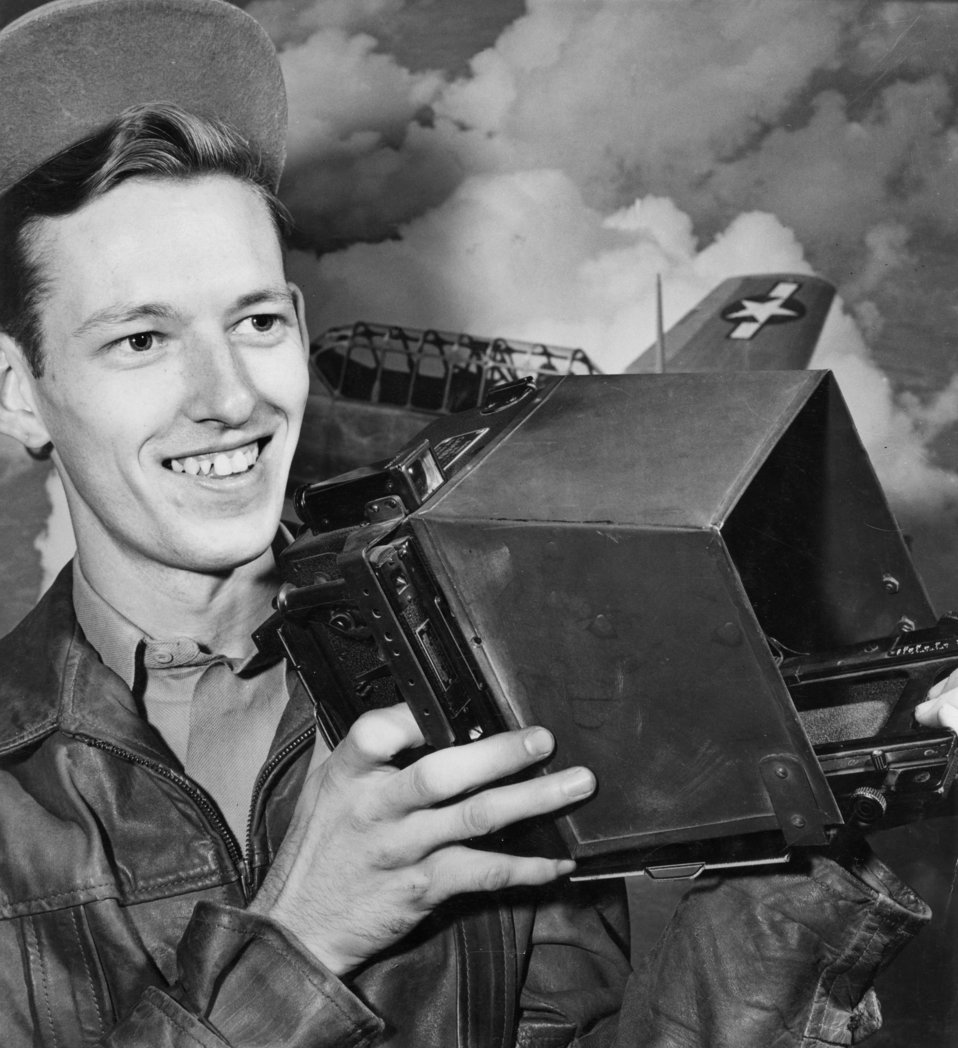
Ed Westcott AEC Photogaper Oak Ridge 1944

DOE photo Ed Westcott Self Portrait 1944 Oak Ridge Tennessee